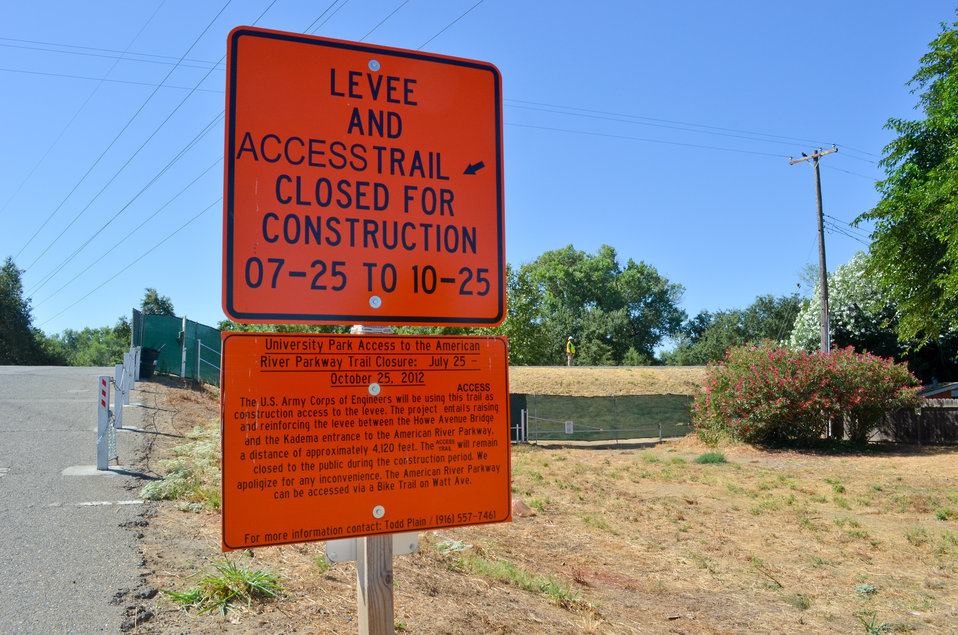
Kadema Drive trail access sign

An informational sign posted at the Kadema Drive trail access, shown Aug. 2, 2012, informs the public on why the access is closed, for how long and who to contact with questions. Signs are posted at both ends of the Howe Avenue levee raise project along the American River in Sacramento, Calif. After scheduled completion in October, the project will further reduce area flood risk by raising and reinforcing more than 4,000 feet of levee.